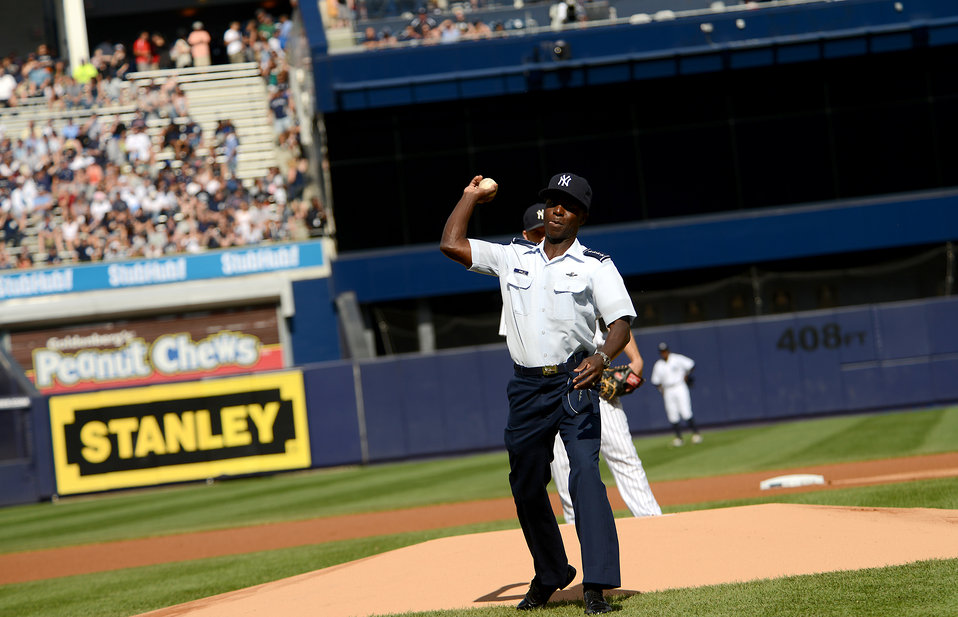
Yankees game

Gen. Edward A. Rice throws out the first pitch at Yankee Stadium before the Yankees vs. Red Socks game during Air Force Week 2012 in New York City on Aug. 18.